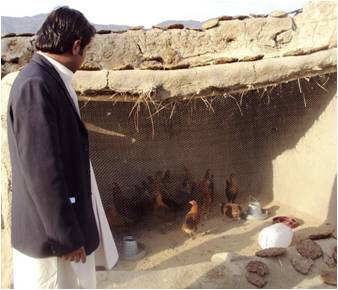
Chickens Improve Livelihoods

The economy of Afghanistan has always been agriculture-based, with most of the country’s rural areas dependent on livestock rearing, crop cultivation, and orchards. To improve production and strengthen rural economies, USAID funded a project that provides animal husbandry training, and goat and chicken distribution to women in need of assistance.
According to local Afghan custom, the household or men generally own livestock, while women own chickens and goats. In agricultural areas, community leaders and local authorities worked with USAID to select the most vulnerable beneficiaries to participate in the project.
Miriam* is one of many poor women who seized the opportunity to earn additional income. She lives with her elderly husband in the village of Mendrawol in Laghman Province. Years of subsistence-level farming had impoverished the couple, and Miriam knew she had to find a way to protect her family.
Along with other women from her community, Miriam received training in animal husbandry and received 20 chickens to start her own poultry business. After three months, Miriam’s chickens started laying eggs at a rate of about 16 eggs per day. Now, Miriam earns 128 Afghanis (approximately $2.50) per day by selling the eggs in the local market. This additional income allows Miriam to provide food for her family and meet other basic needs. If Miriam does not need to sell the eggs or use them for food, she can leave them under her hens. The baby chicks that hatch will grow up to lay their own eggs, thus multiplying her hens and further increasing family income.
Community development activities, similar to this one implemented as part of the Strategic Provincial Roads – Southern and Eastern Afghanistan project, foster support and ownership of USAID-constructed roads and provide sustainable employment after the roads are constructed.
*Miriam is a pseudonym given to the woman for the sake of her personal security.